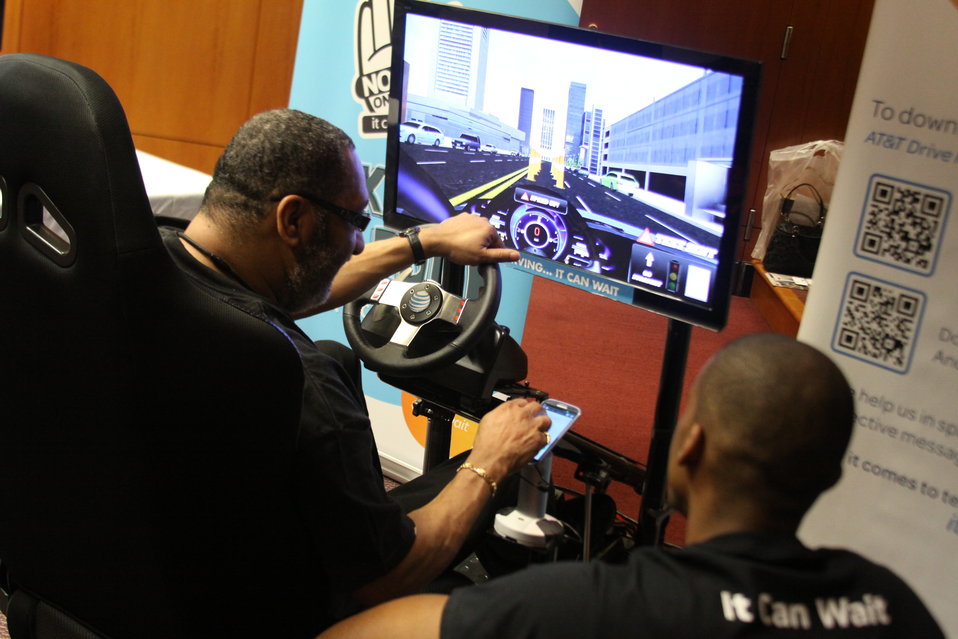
Distracted Driving Technology Showcase April 19, 2013